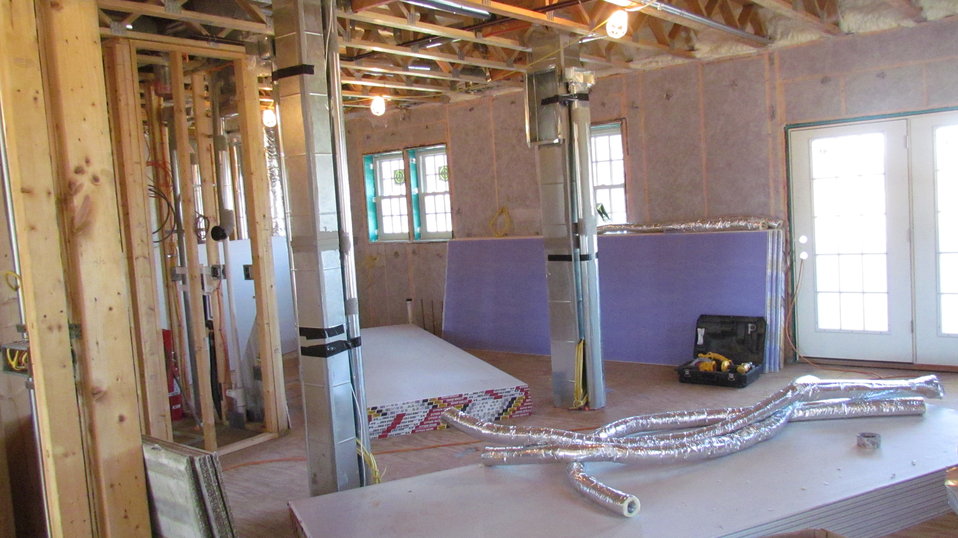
Photo showing a portion of the duct work associated with the high velocity air distribution system. This is one of the three systems in the facility for distributing heated and cooled air throughout the facility. The other two systems are a conventional metal duct system to distribute conditioned air and provisions to include a mini-split system that eliminates the vast majority of an air distribution system.